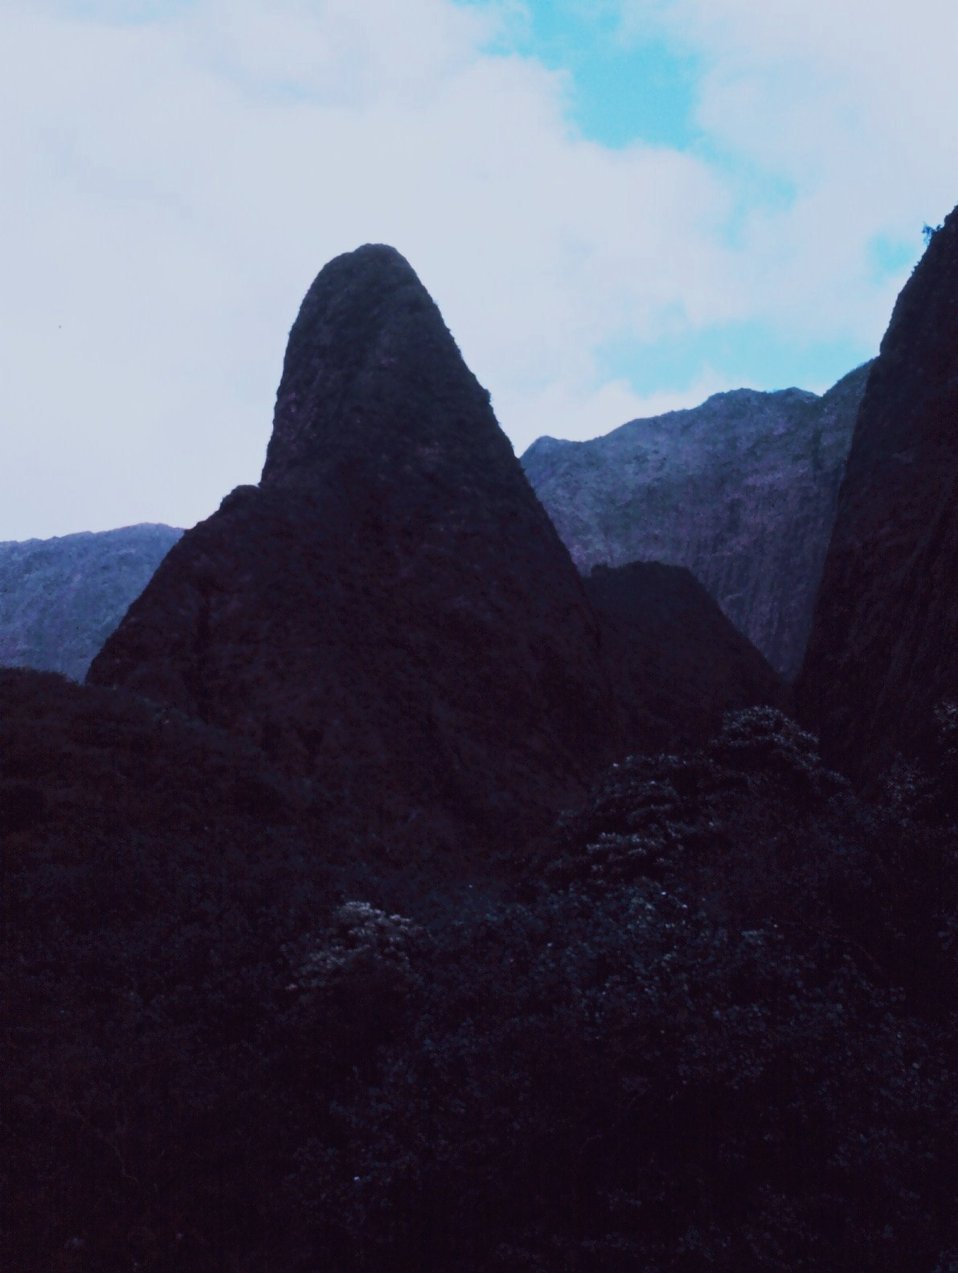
Lanai- Maui trip